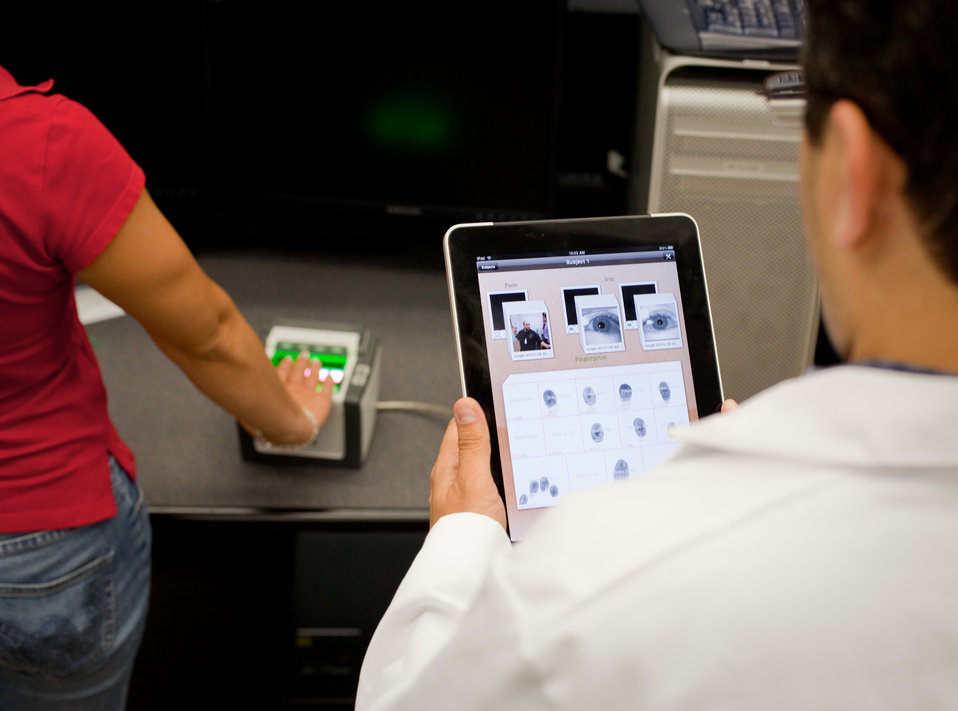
Biometrics Consortium Conference

NIST's Biometric Web Services team captures a fingerprint remotely using Web Services for Biometric Devices, which is a new system built on standard web technologies.